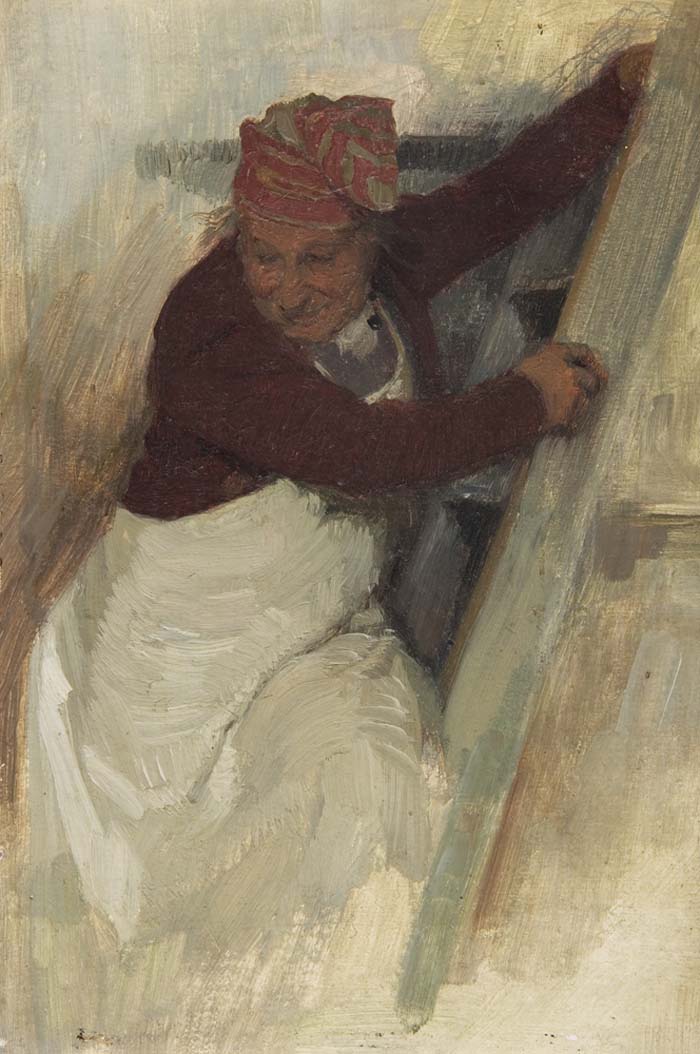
Mann mit Zipfelmütze auf einer Leiter. Öl auf Karton, unsigniert, rückseitig Nachlass-Stempel, 20 x 14.5 cm